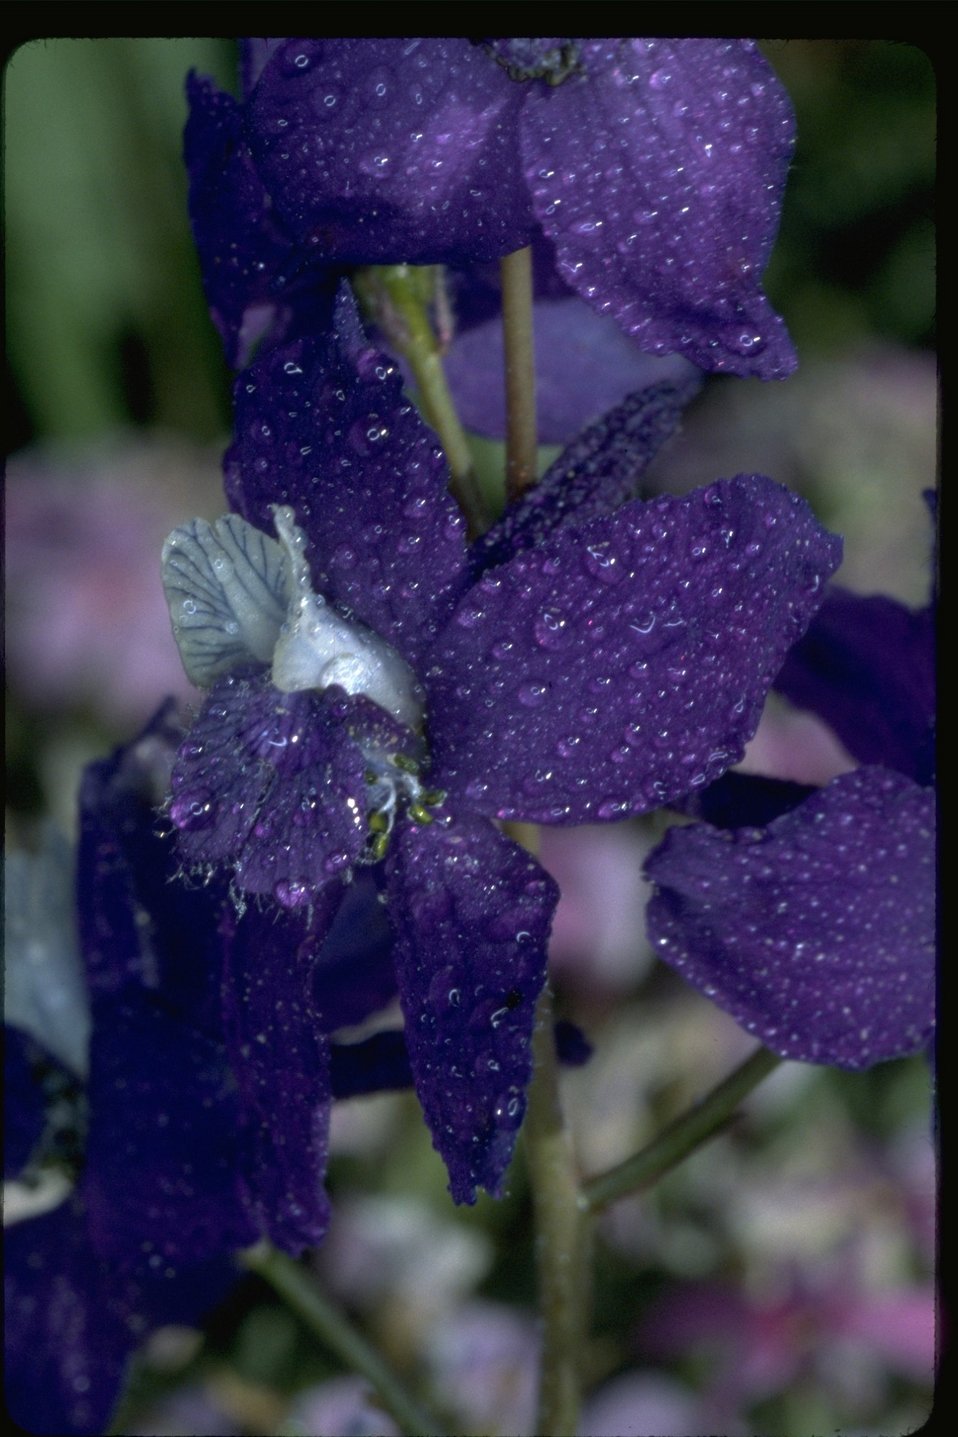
Close up of delphinium/Larkspur with dew.